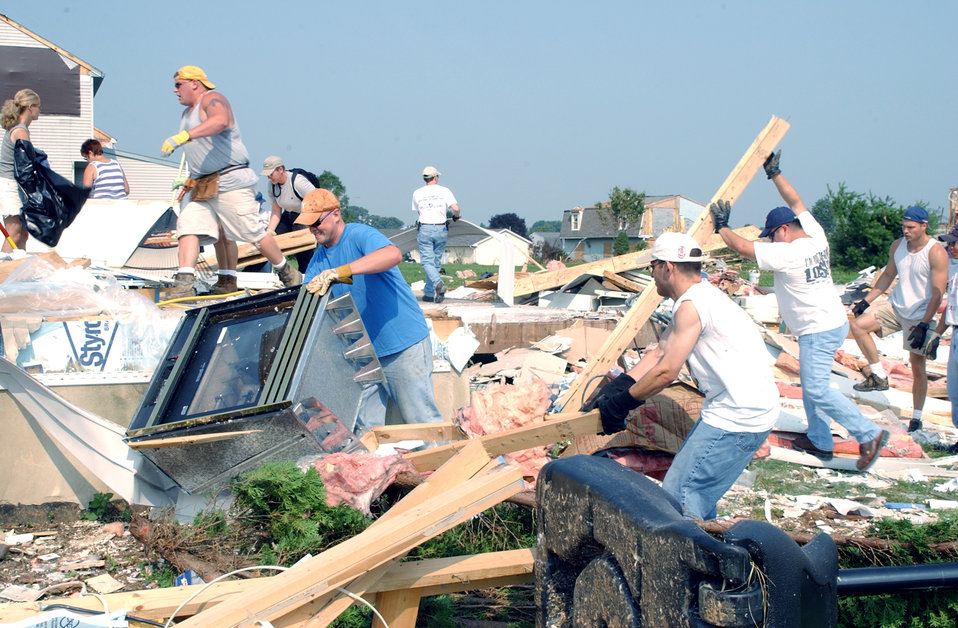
Aftermath of destruction

CAMPBELLTOWN, Pa. -- Airmen from the 193rd Special Operations Wing at Middletown, Pa., go to work here July 24 clearing rubble and debris from the property of Senior Master Sgt. John Stewart whose home was destroyed by a tornado July 14. Sergeant Stewart, an information assurance specialist for the wing, said he is blessed to be a part of the Air National Guard family.